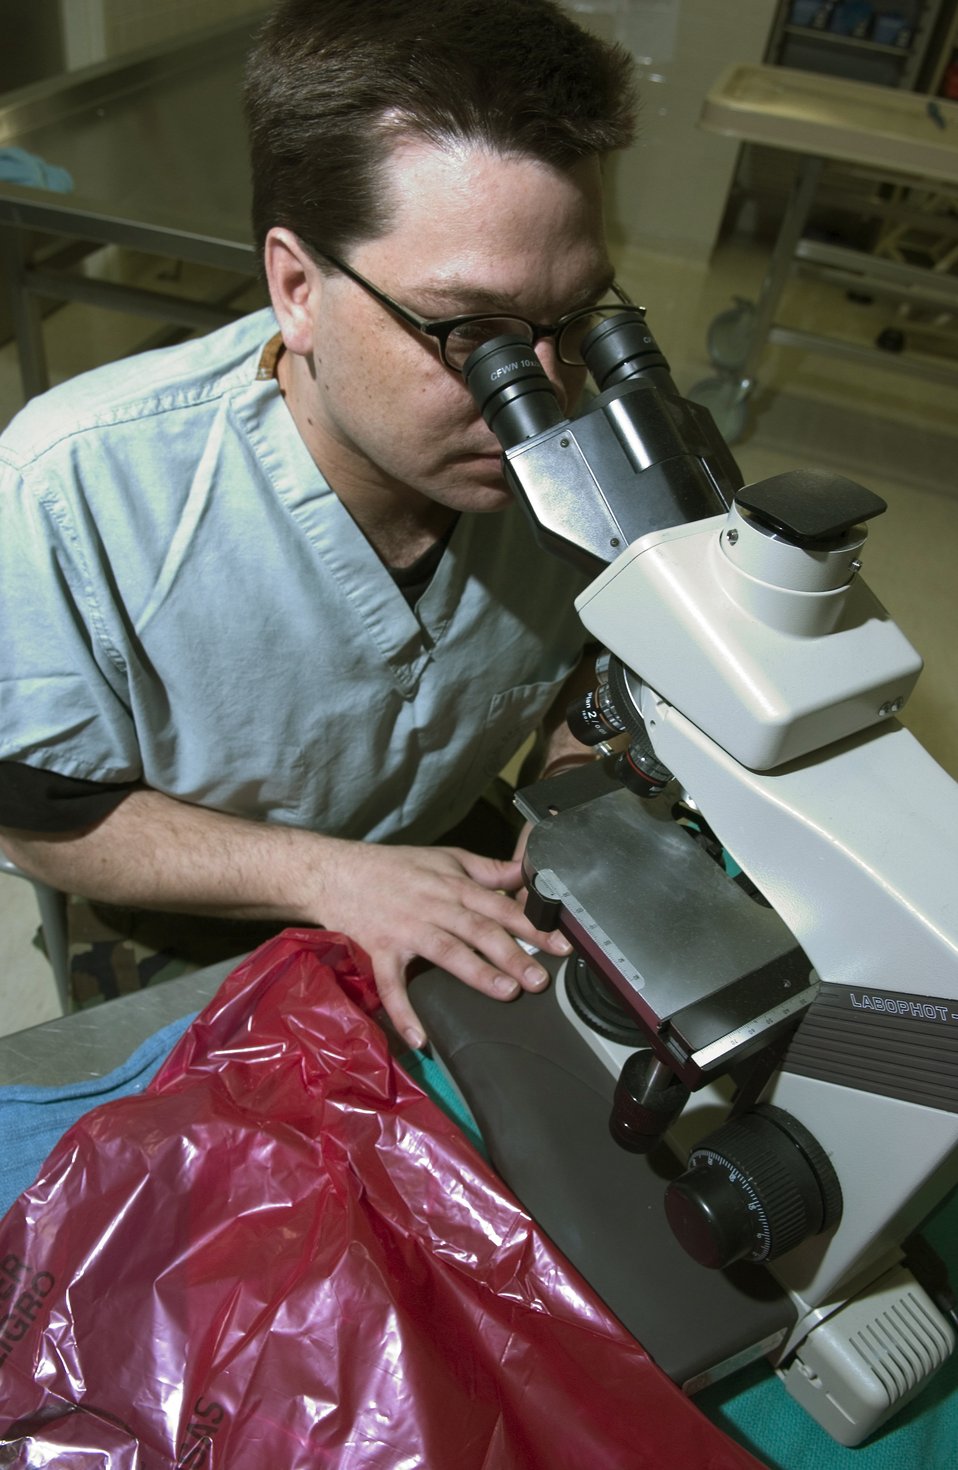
Under the scope

Staff Sgt. Michael Taylor performs function checks on a microscope at Elmendorf Air Force Base, Alaska, on Thursday, March 23, 2006. He uses the microscope to look at skin tissues for cancer or other diseases. Sergeant Taylor is with the 3rd Medical Group.